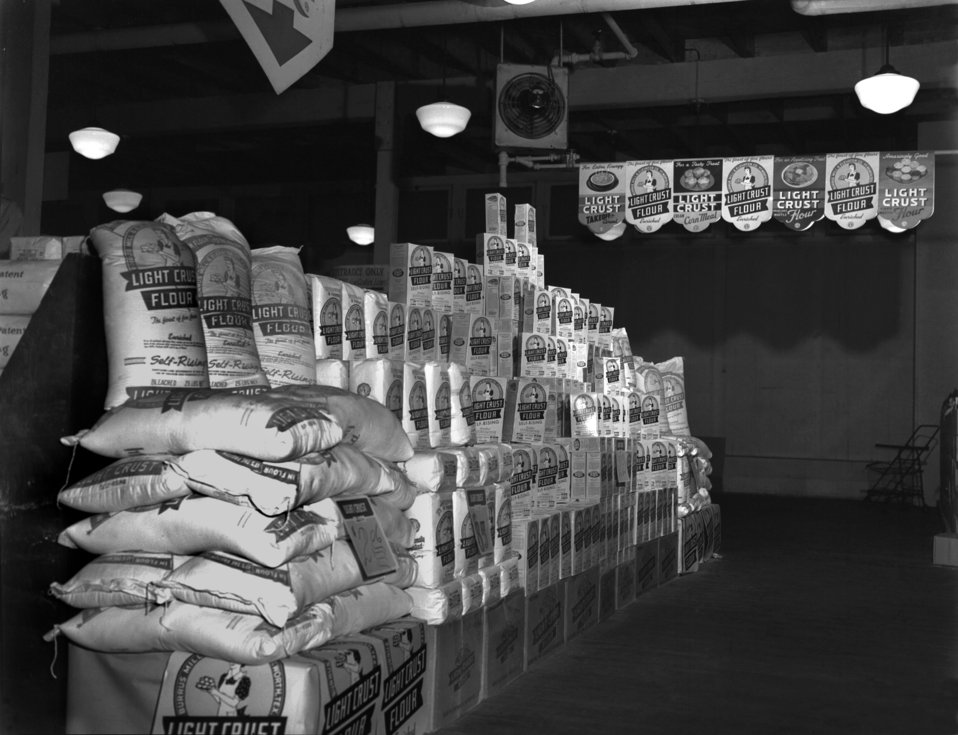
Tulip Town Market Oak Ridge

3256-2 DOE photo Ed Westcott 1-17-1947 Oak Ridge Tennessee